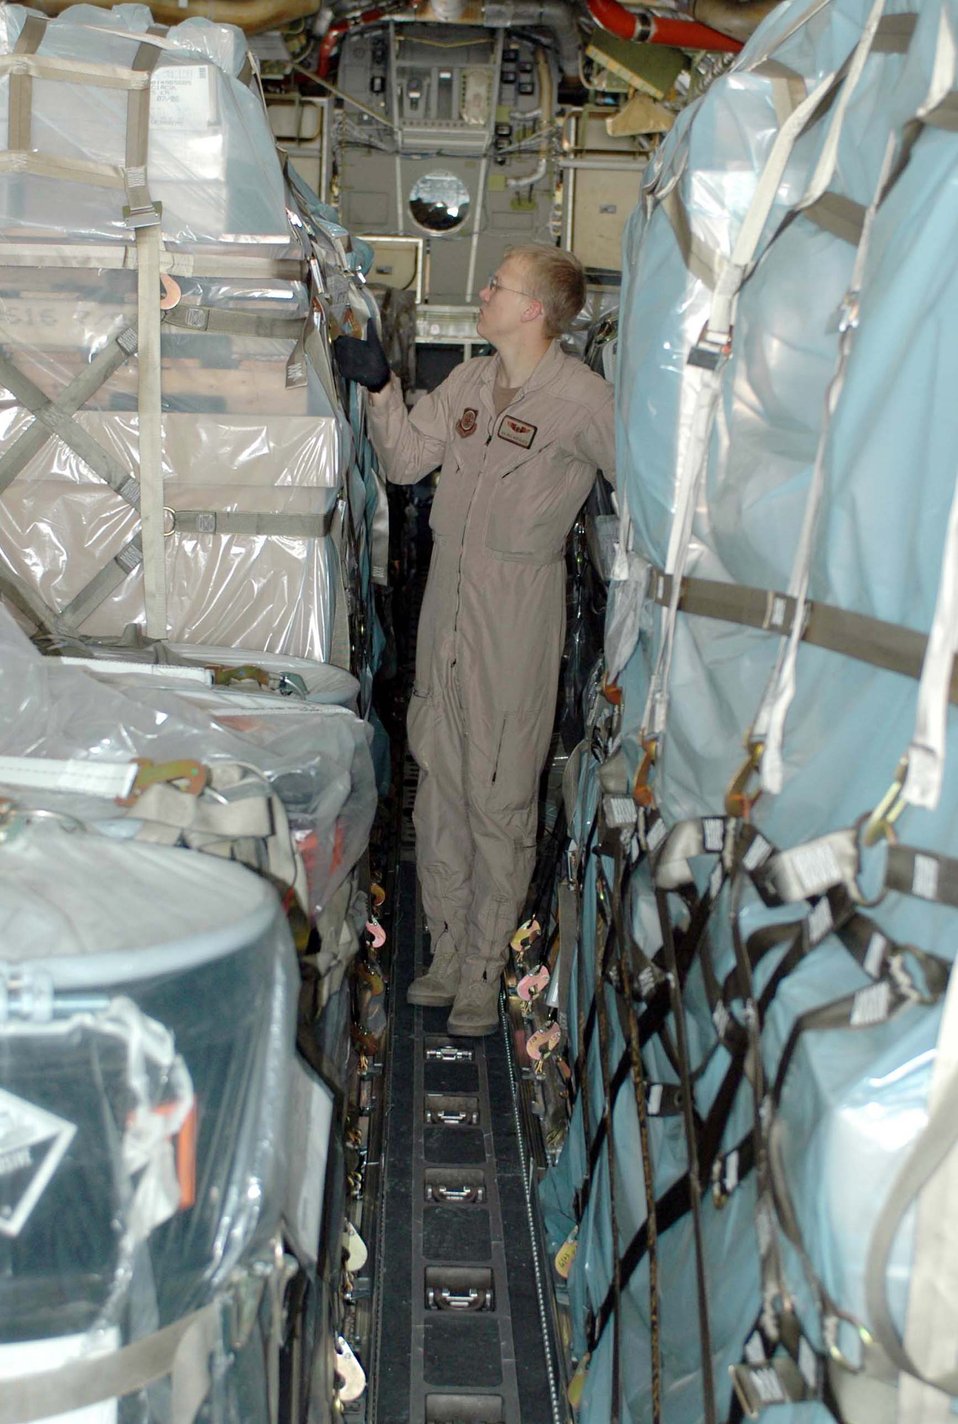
Global missions all in a day's work

Airman 1st Class Cole Bertolozzi checks the shipping label on a cargo item at Manas Air Base, Kyrgyzstan, on Aug. 8. As a loadmaster, Airman Bertolozzi is responsible for ensuring the cargo and passengers are loaded onto the aircraft correctly and safely. He is deployed from the 10th Airlift Squadron at McChord Air Force Base, Wash.